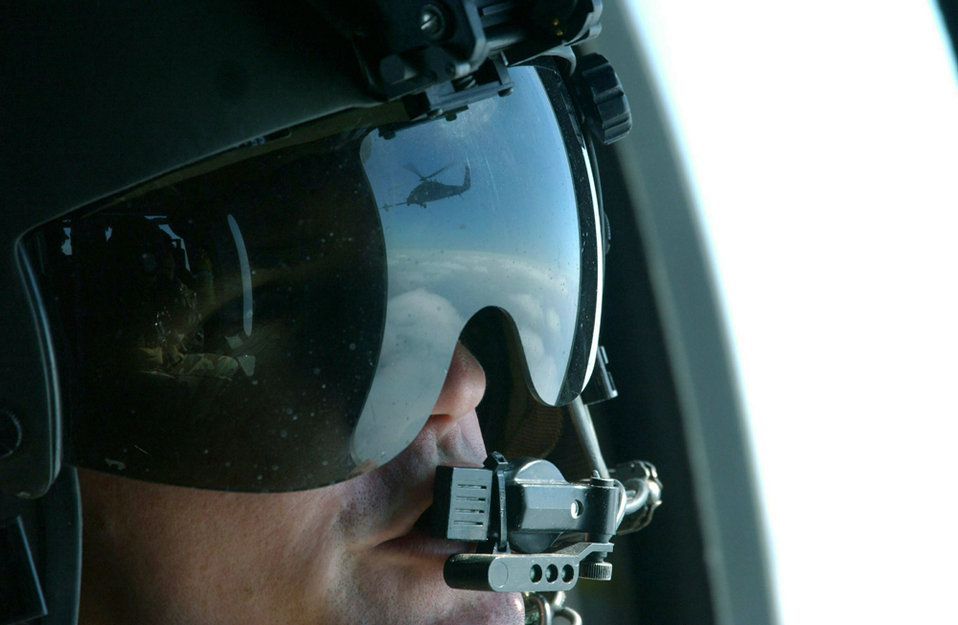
Water world

OVER THE PACIFIC OCEAN -- Senior Airman Brian Lilly watches an HH-60 Pave Hawk refuel during water rescue training Sept. 13 among the 55th, 79th and 48th Rescue Squadrons from Davis-Monthan Air Force Base, Ariz. Airman Lilly is an HH-60 helicopter gunner.